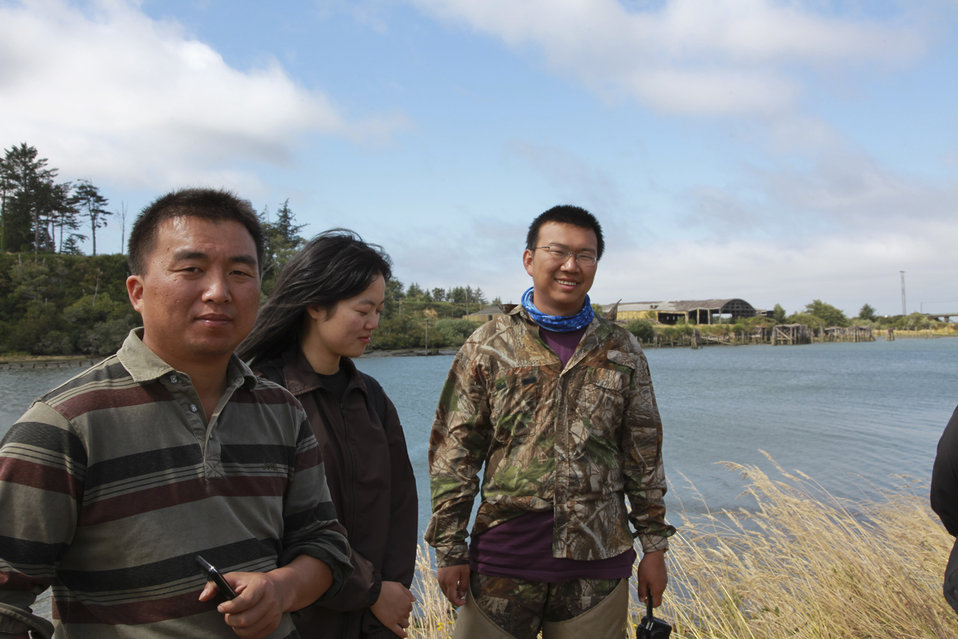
Xu Yingshou, Miao Yu, Jia Yifei